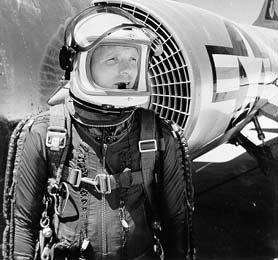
Captain Iven C. Kincheloe Jr.

1950's -- Captain Iven C. Kincheloe Jr. pictured here in full pressure suit prior to a high altitude flight in the F-104 Starfighter. Kincheloe, the personification of the